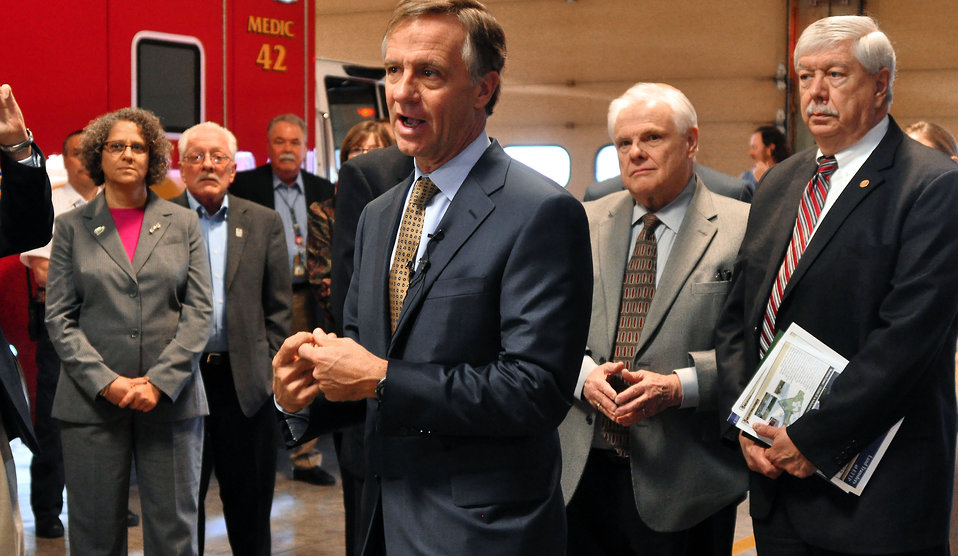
Gov. Bill Haslam Visit to ETTP 2014 Oak Ridge

14-037 DOE photo Lynn Freeny 3-21-2014 Oak Ridge Tennessee